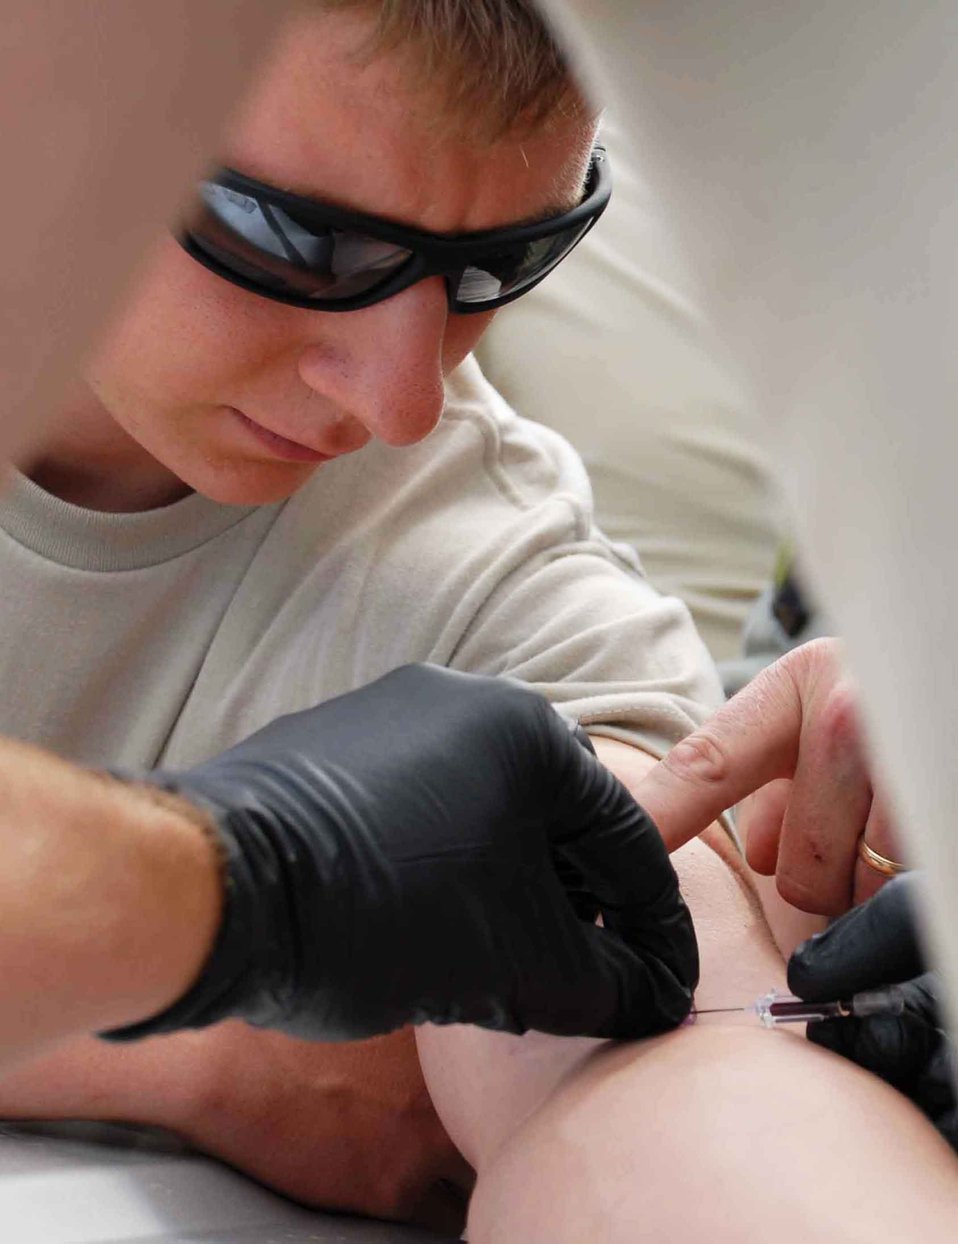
Airmen train with Army to become JTACs

Airman 1st Class Doug Fraites, 25th Air Support Operations Squadron ground radio maintenance, gives Airman 1st Class Cory Aita fluids through an intravenous catheter in the field June 25. Soldiers helped train 25th Air Support Operations Squadron tactical air control party members to become combat mission-ready joint terminal attack controllers. When deployed, these young men are stationed with Army combat units and are responsible for calling in close-air support. As combat Airmen, their jobs incorporate expertise above and beyond what's normally required of warriors in blue.